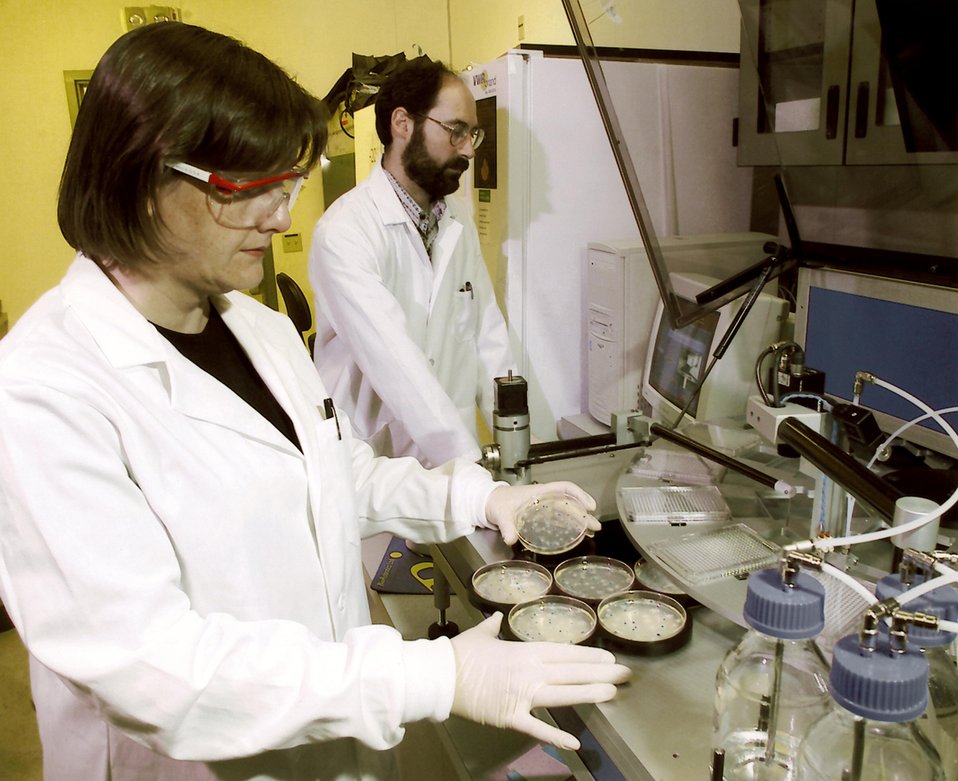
LLNL BIOMEDICAL SCIENTISTS PERFORM SUPPRESSIVE SUBTRACTIVE HYBRIDIZATION VARIOUS SPECIES OF VIRULENT ORGANISMS.

IN THE ABOVE IMAGES THE SCIENTISTS ARE PERFORMING SUPPRESSIVE SUBTRACTIVE HYBRIDIZATION IN ORDER TO DISTINGUISH THE DNA OF VARIOUS SPECIES OF VIRULENT ORGANISMS. LLNL SCIENTISTS ARE DEVELOPING DNA-BASED SIGNATURES UNIQUE TO PATHOGENS (DISEASE CAUSING MICROBES) IN ORDER TO DETECT BIOLOGICAL AND CHEMICAL WARFARE AGENTS. THIS PROGRAM IS DESIGNED TO IMPROVE RESPONSE CAPABILITY TO BIOLOGICAL AND CHEMICAL ATTACKS ON THE CIVILIAN POPULATION.